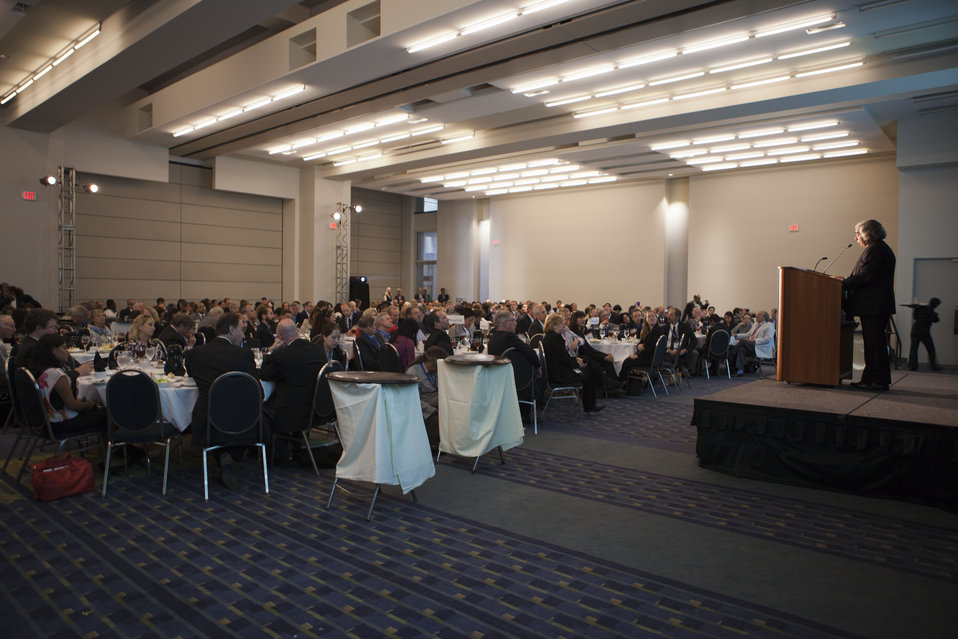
Secretary Moniz at the 2013 Energy Efficiency Global Forum

Shortly after being sworn in as Secretary of Energy, Dr. Moniz delivered remarks at the 2013 Energy Efficiency Global Forum, assuring that energy efficiency will be a 'big focus' for the Department of Energy.